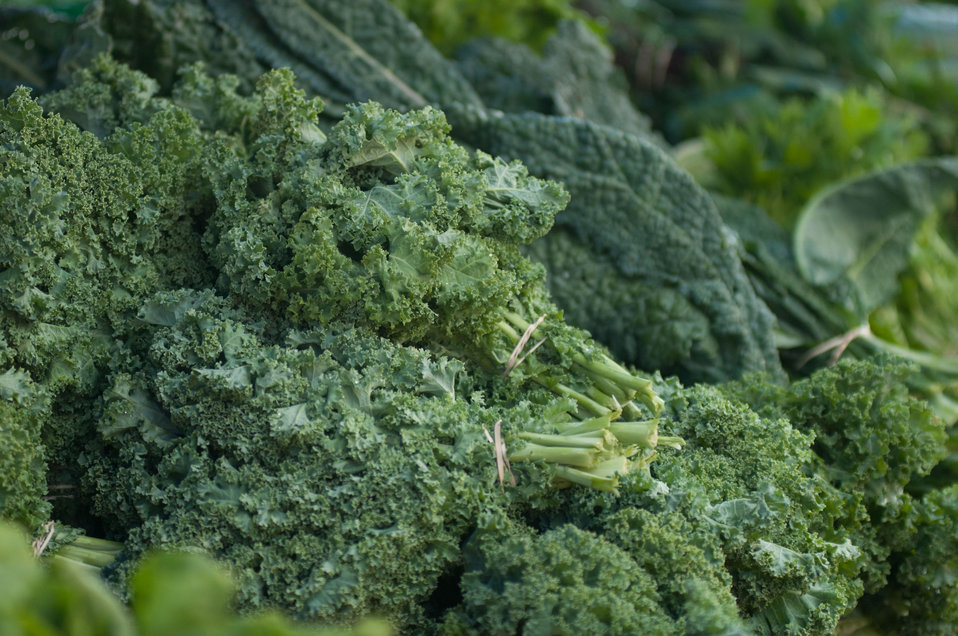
Worden Farm (www.wordenfarm.com) fresh picked organic curly kale are ready for sale at the Saturday Morning Market, in St. Petersburg, FL, on April 14, 2012. Worden Farm is a family farm that provides certified organic produce to Southwest Florida through community supported agriculture (CSA) membership programs and retail sale at several farmer’s (community) markets. Chris Worden, Ph.D. and Eva Worden, Ph.D. founded and operates the farm that employs more than 20 people. Growing certified organic crops in the coastal sandy soil has required them to develop innovative farming techniques which help the farm as well as assist the studies of universities and farm industry. There are several Worden Farm apprenticeships that provide hands-on training in all aspects of the farm, to include direct marketing at the Saturday Morning Market, or other market sites. The farm also holds culinary and gardening workshops, and other interactive educational events. One of their organic certifications is from the U.S. Department of Agriculture (USDA) and they have partnered with the USDA Natural Resources Conservation Service (NRCS) for soil conserving windbreaks and long tunnel structures to nurture seedlings and extend the growing season.